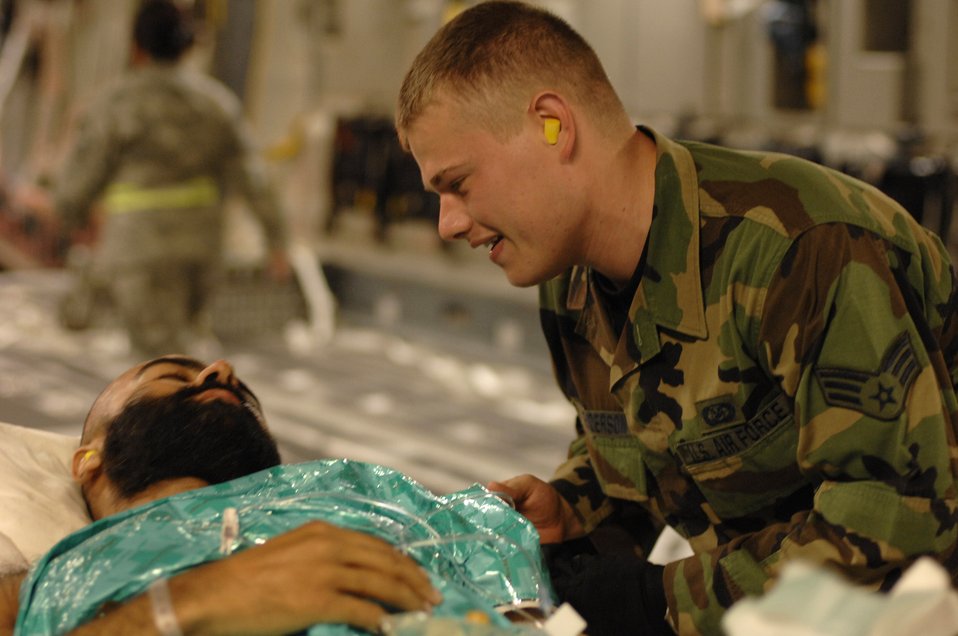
Prepared for aeromedical transport

Senior Airman Jeremiah Henderson visits with a wounded warrior from Bagram, Afghanistan, at Ramstein Air Base, Germany. The Airman is the contingency aeromedical staging facility's chaplain assistant.